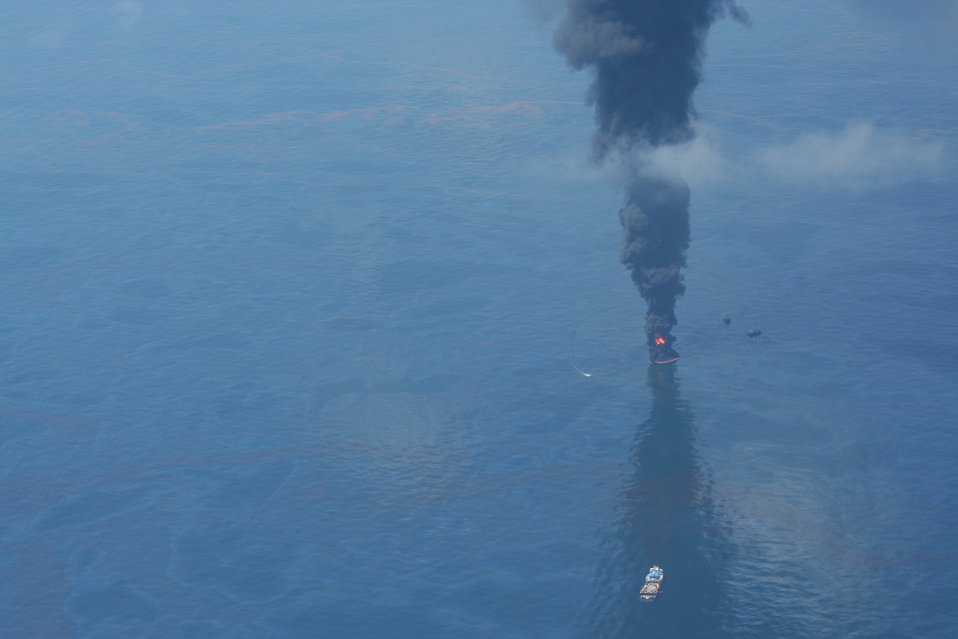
May 6 Open Water Oil Burn

May 6, 2010 - Open-water oil burn

Photo taken from U.S. EPA's Airborne Spectralphotometric Environmental Collection Technology (ASPECT) aircraft.